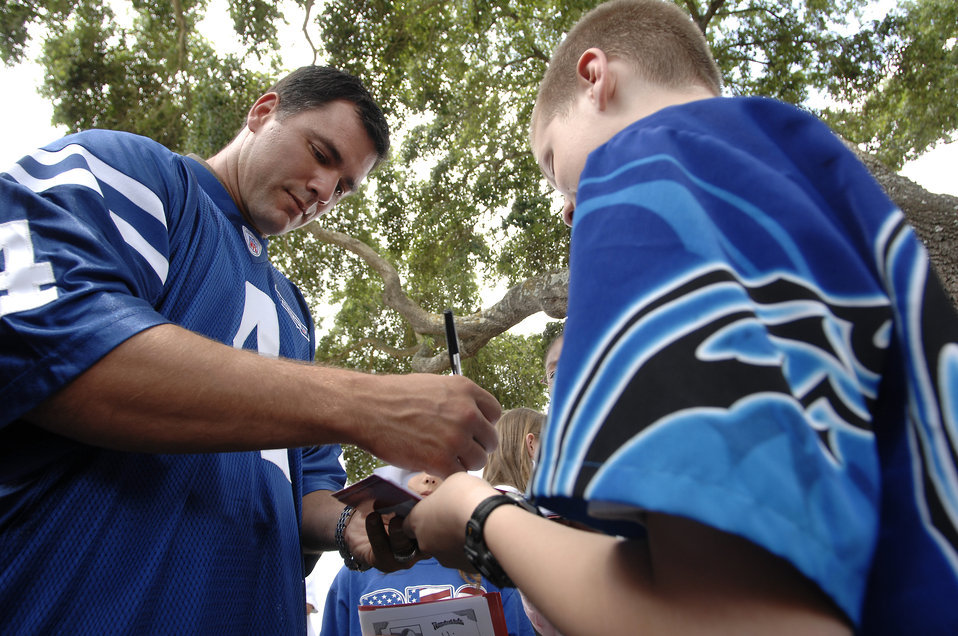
Indianapolis Colts visit Randolph Air Force Base

Indianapolis Colts kicker Adam Vinatieri signs an autograph for a student at Randolph Elementary School on Randolph Air Force Base, Texas, June 1. Colts team members spent the day visiting with base personnel and school children, enhancing the already strong relationship between the team and the Air Force.